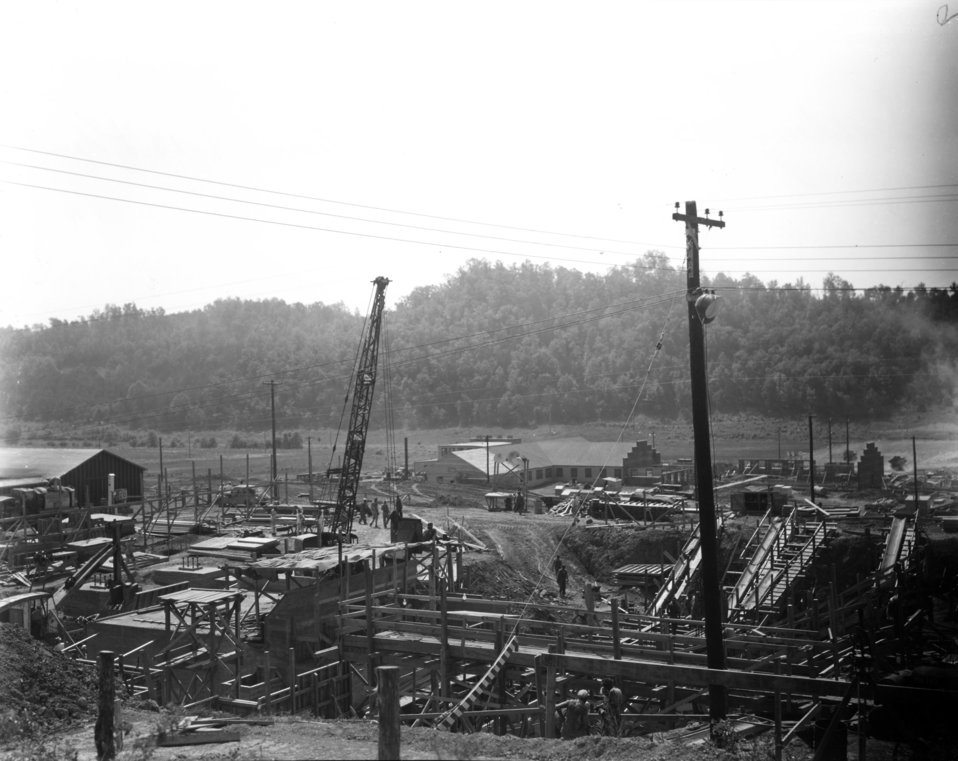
X-10 at Oak Ridge